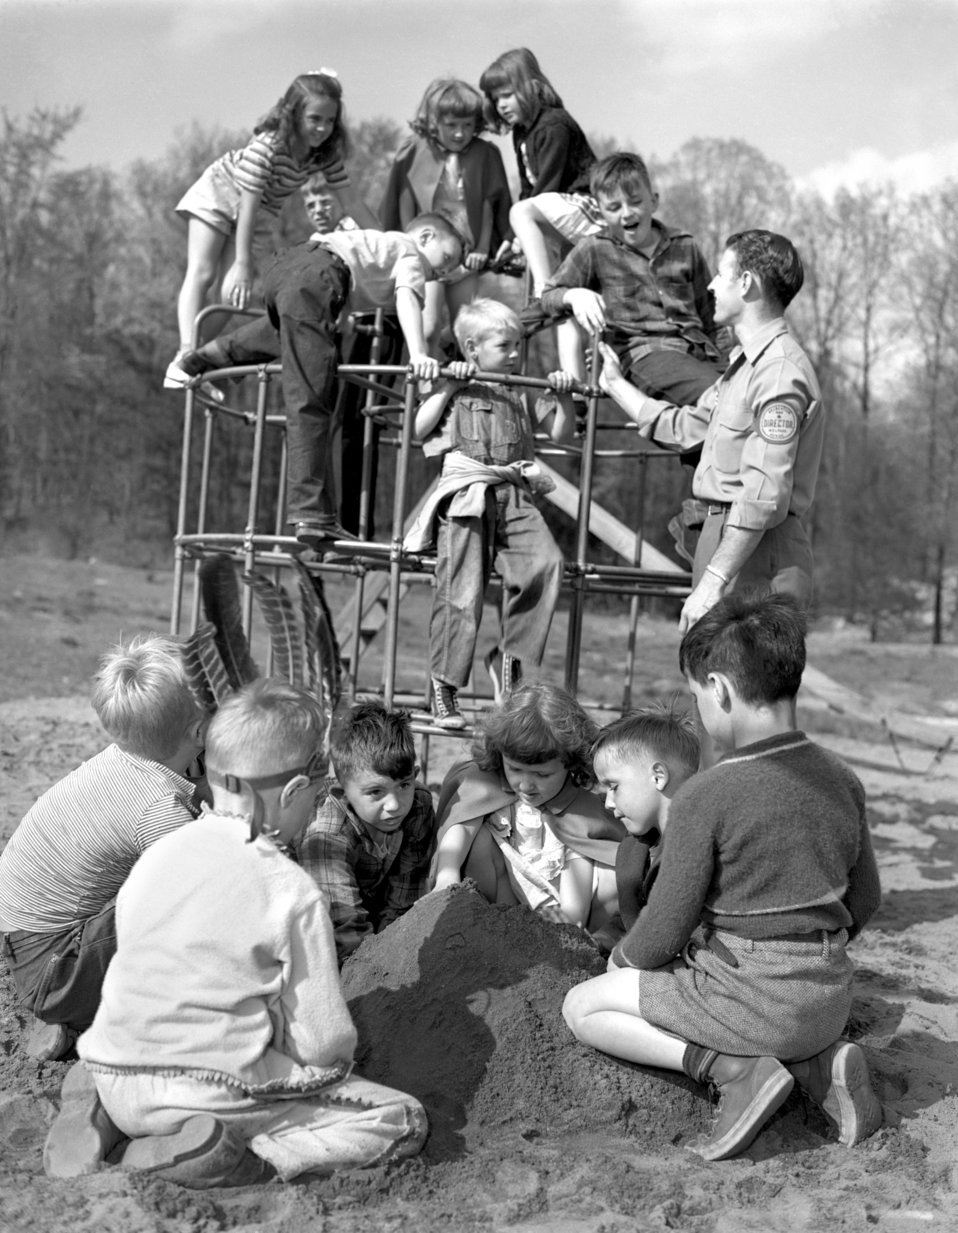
Play Ground Activity for Activity for Recreation Welfare Oak Ridge 1947

3414-12aa DOE photo Ed Westcott 4-17-1947 Oak Ridge Tennessee